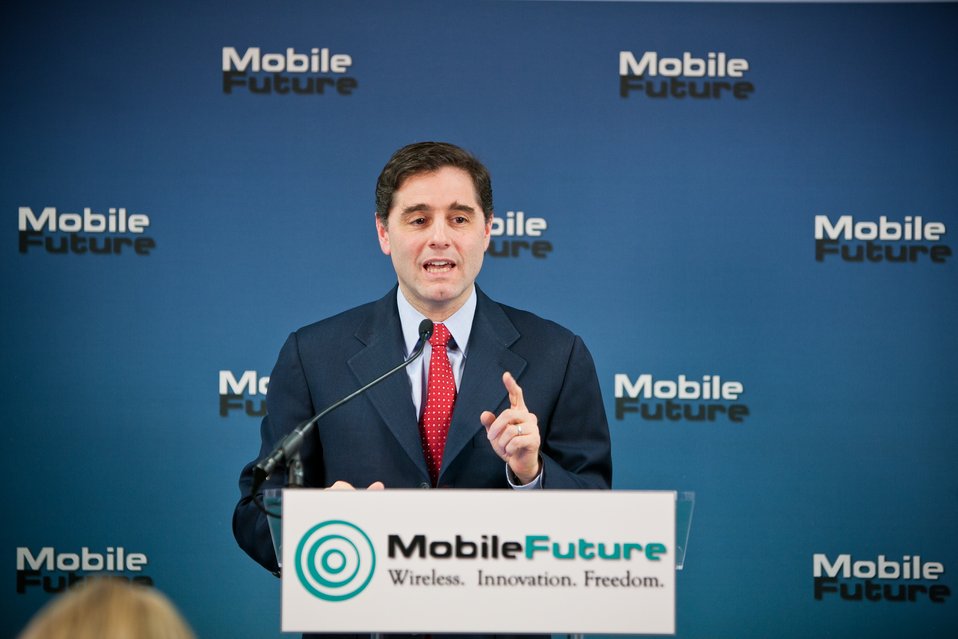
Genachowski Mobile Future Forum